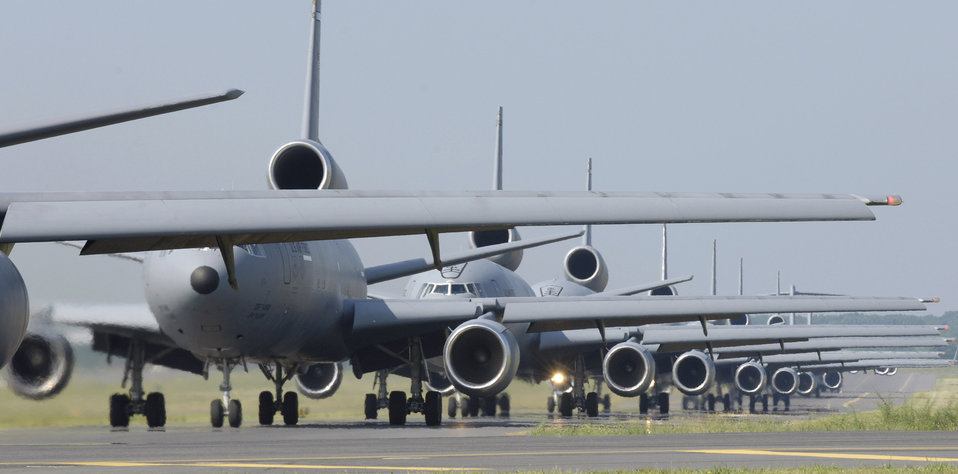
Elephant Walk

KC-10 Extenders and C-17 Globemaster IIIs from McGuire Air Force Base, N.J., taxi down the flightline during an emergency response exercise elephant walk. This is the first time C-17s and KC-10s have been paired in an exercise. Sixteen aircraft launched from McGuire on Friday, June 30, as part of the exercise.